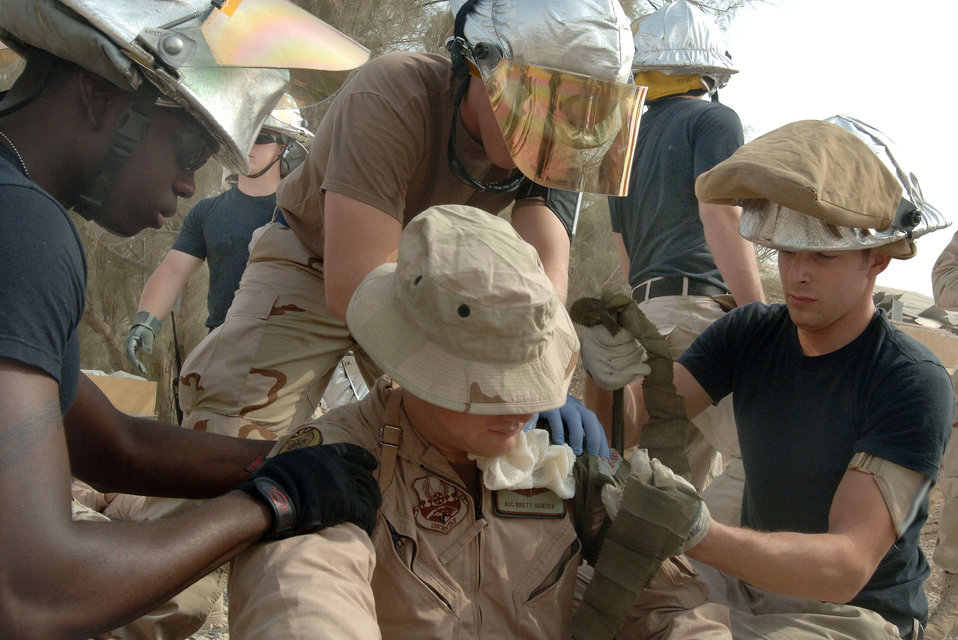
Operation Iraqi Freedom

ALI BASE, Iraq -- Senior Airman Donnie Rogers (left) and Airman Bret Fontaine (right) get help from a fellow firefighter to provide care to an